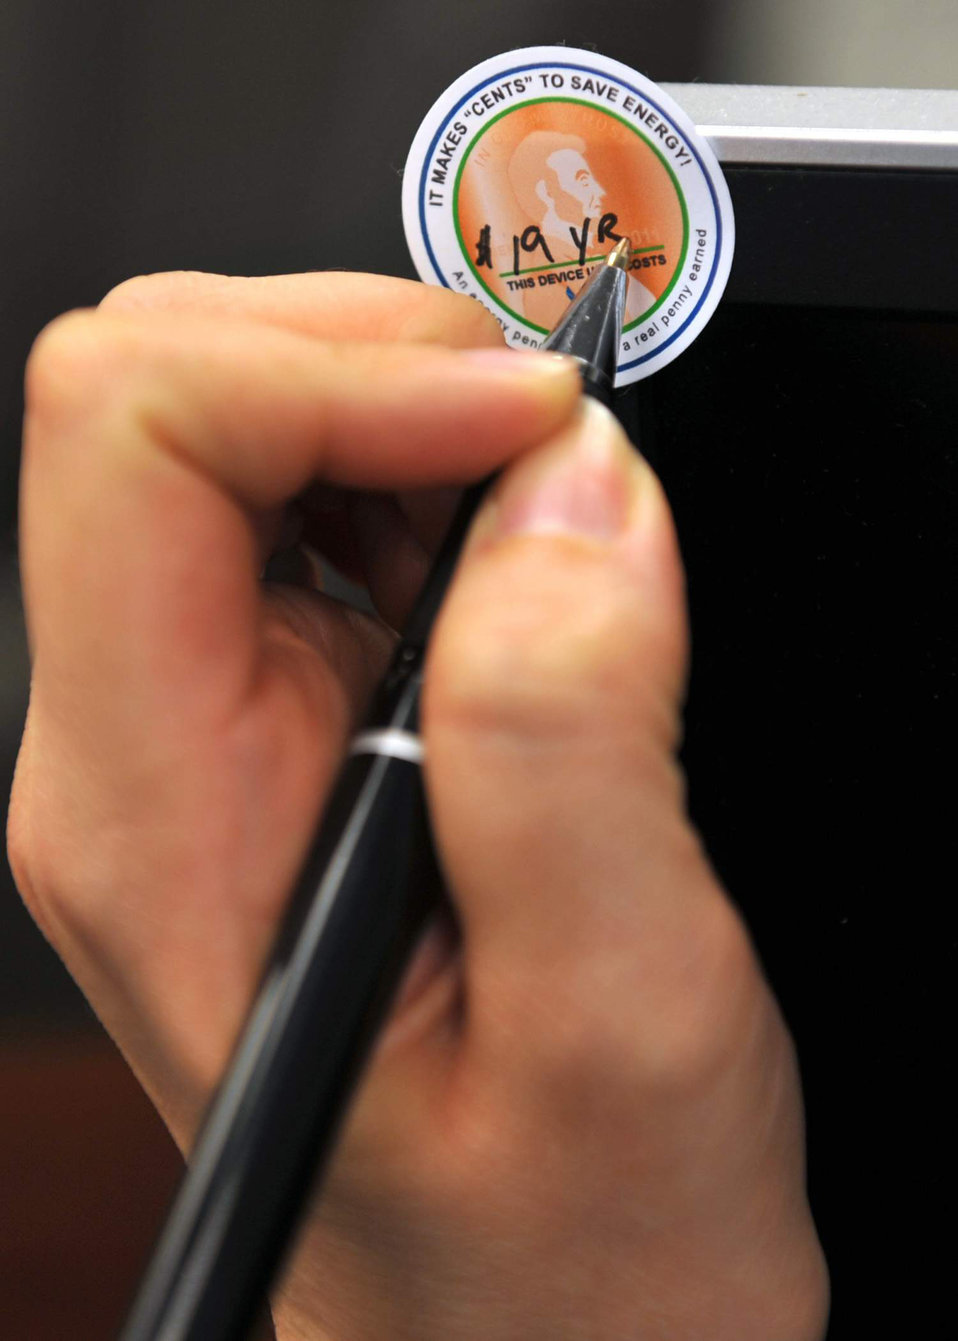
Energy conservation sticks at Scott AFB

A facility manager at Scott Air Force Base, Ill., marks an energy awareness sticker placed on a computer monitor April 21, 2011. The stickers are meant to bring awareness to the average user about just how much turning on that light switch or computer monitor can cost each day or throughout the course of a year.